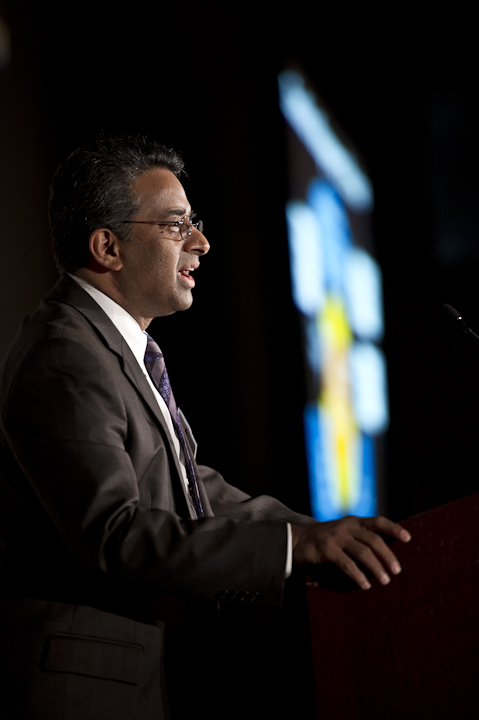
SunShot Ramesh

June 14, 2012- R. Ramesh, Director, SunShot Initiative, U.S. Department of Energy speaks at the plenary session at the SunShot Grand Challenge Summit and Technology Forum in Denver, Colorado.